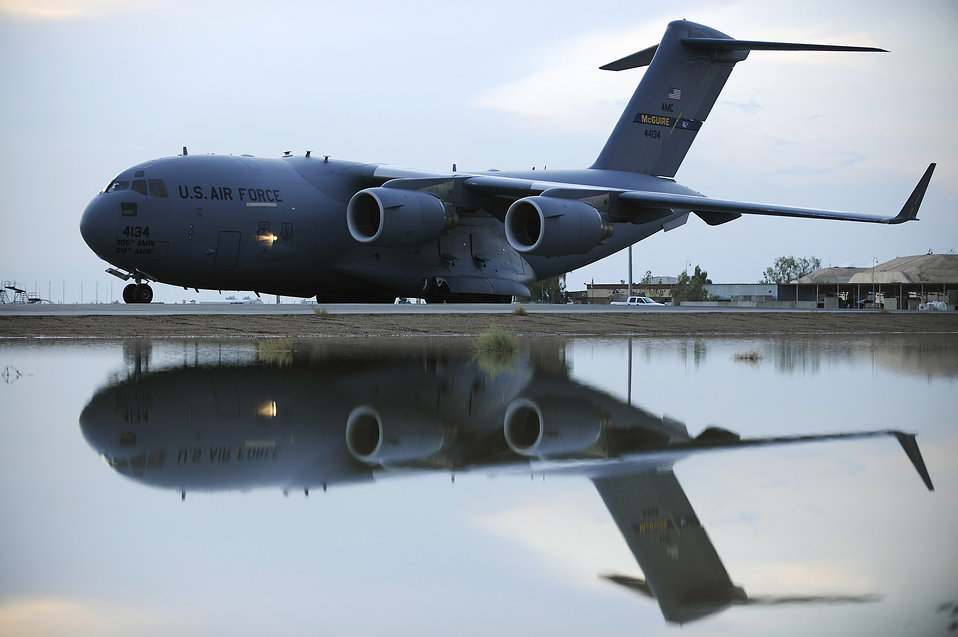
C-17s help sustain operations

A C-17 Globemaster III taxis after landing at an air base in Southwest Asia. The C-17 performs tactical airlift and airdrop missions, transports passengers, performs medical evacuations, delivers troop resupply and all types of cargo throughout Southwest Asia in support of operations Enduring Freedom and Iraqi Freedom.